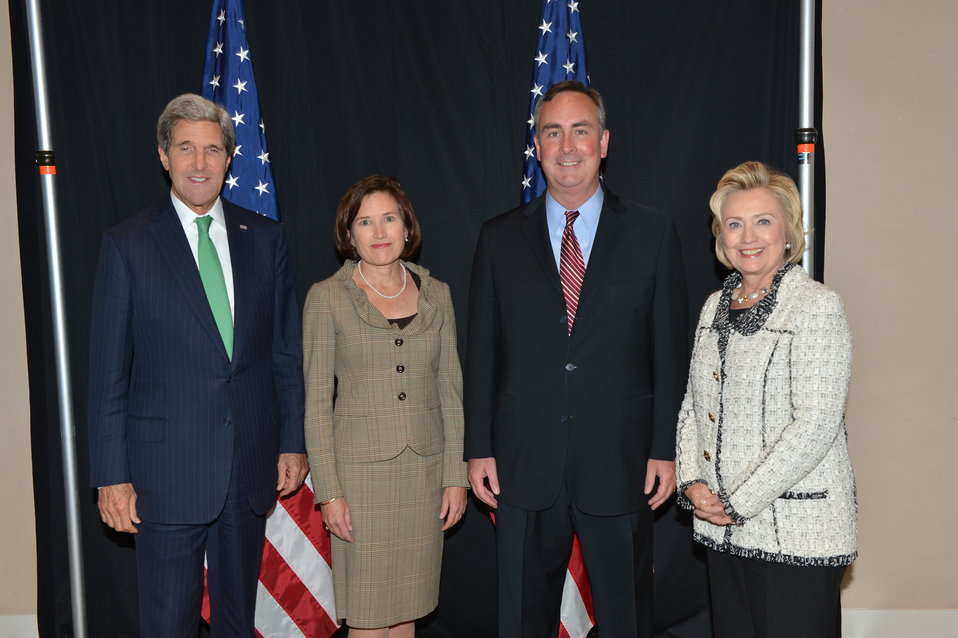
Secretary Kerry at the Chris Stevens Virtual Exchange Program Event

U.S. Secretary of State John Kerry participates in an event for the Chris Stevens Virtual Exchange Program in New York City on September 25, 2013.